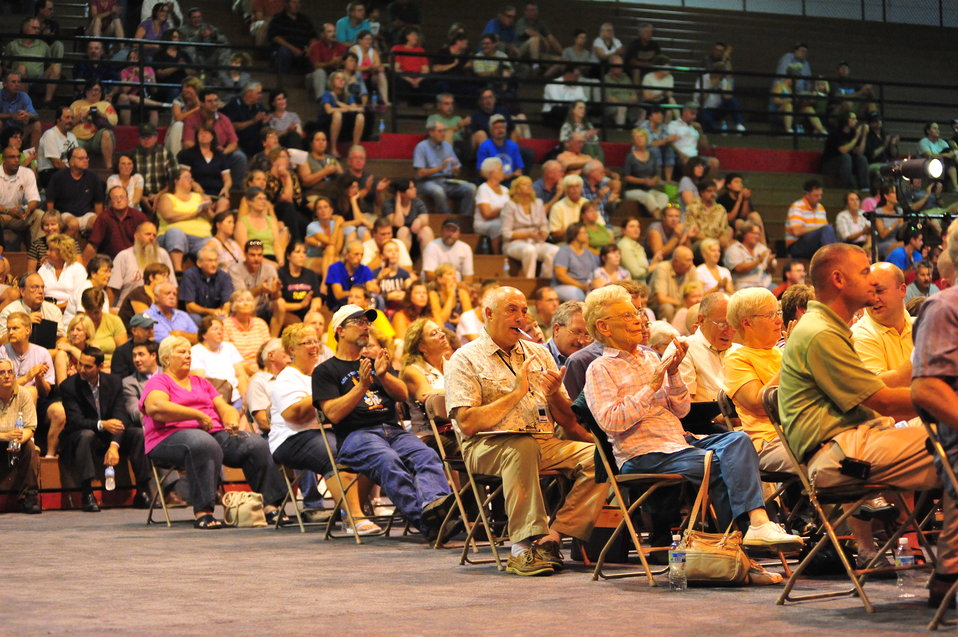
EPA's response to the Enbridge oil spill

August 3, 2010 -- More than 700 concerned residents filled the Marshall, Mich., high school to learn more about the government response to the Enbridge oil spill.